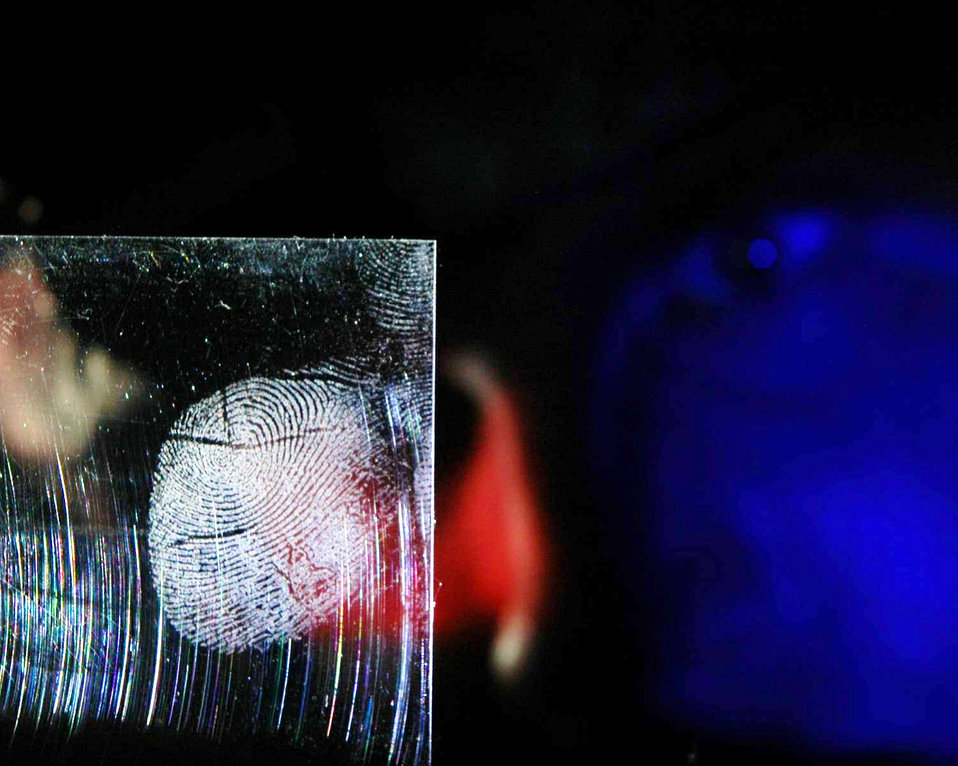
Battlefield detectives fight with fingerprints

A Weapons Intelligence Team member examines a fingerprint on a hinge lifter while exploiting evidence from a recent incident May 10 at Al Asad Air Base, Iraq. WIT members are skilled in improvised explosive device construction, fingerprinting, biometrics, foreign weapons, media exploitation and sensitive sight exploitation.